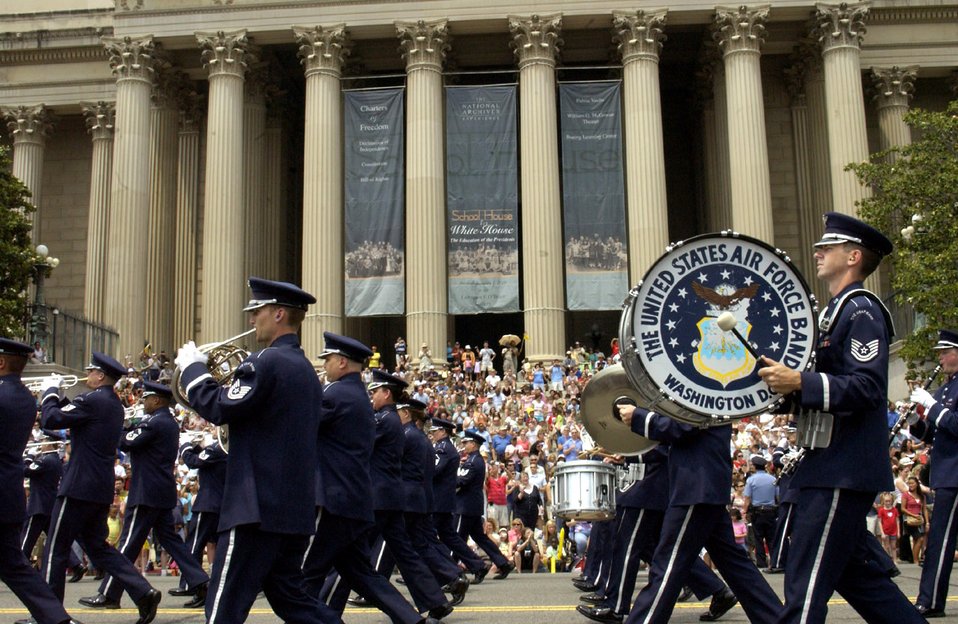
Memorial Day activities

Airmen from the Air Force Band march in front of the National Archives during the National Memorial Day Parade May 28 in Washington, D.C. The parade highlighted the Air Force's 60th anniversary as a separate service. Maj. Gen. Robert L. Smolen, the Air Force District of Washington commander, served as the grand marshall for the parade; Secretary of the Air Force Michael W. Wynne and Chief Master Sgt of the Air Force Rodney J. McKinley also attended.